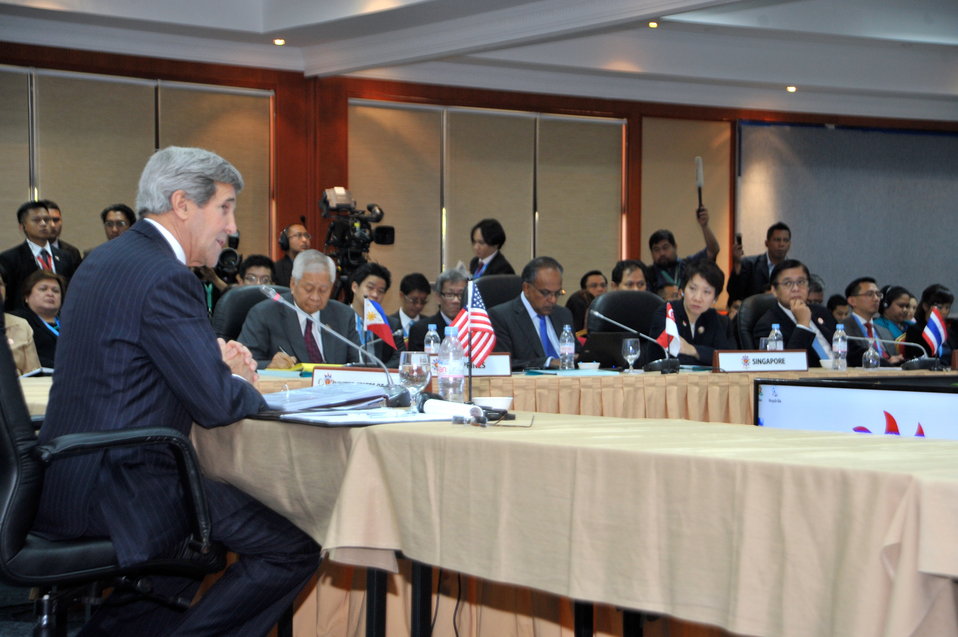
Secretary Kerry Addresses the ASEAN Ministerial Meeting

U.S. Secretary of State John Kerry addresses his fellow foreign ministers at the outset of an ASEAN ministerial meeting in Bandar Seri Bagawan, Brunei Darussalam, on July 1, 2013.